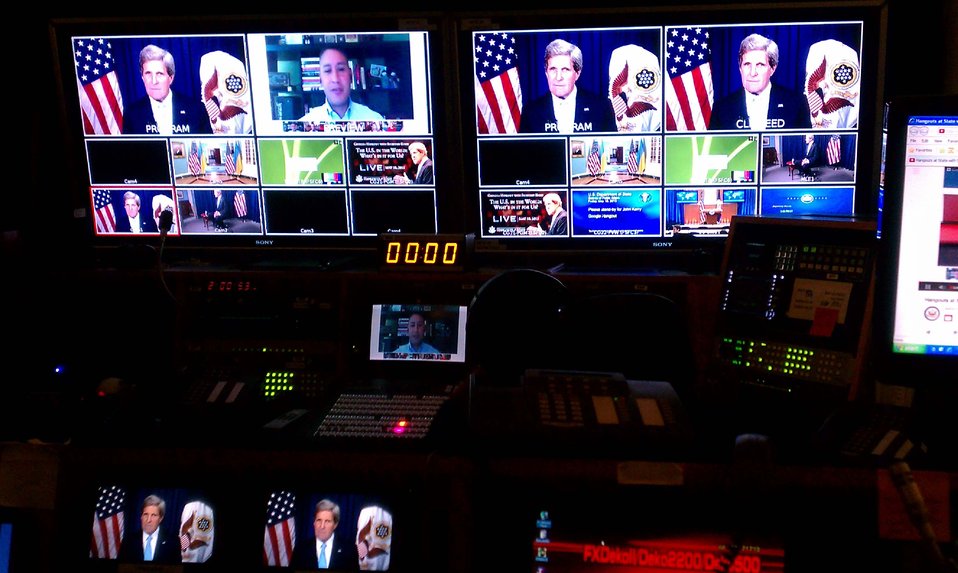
Behind the Scenes: Secretary Kerry's First Google Hangout

Behind the scenes at U.S. Secretary of State John Kerry's Google Hangout with NBC's Andrea Mitchell at the U.S. Department of State in Washington, D.C., on May 10, 2013.